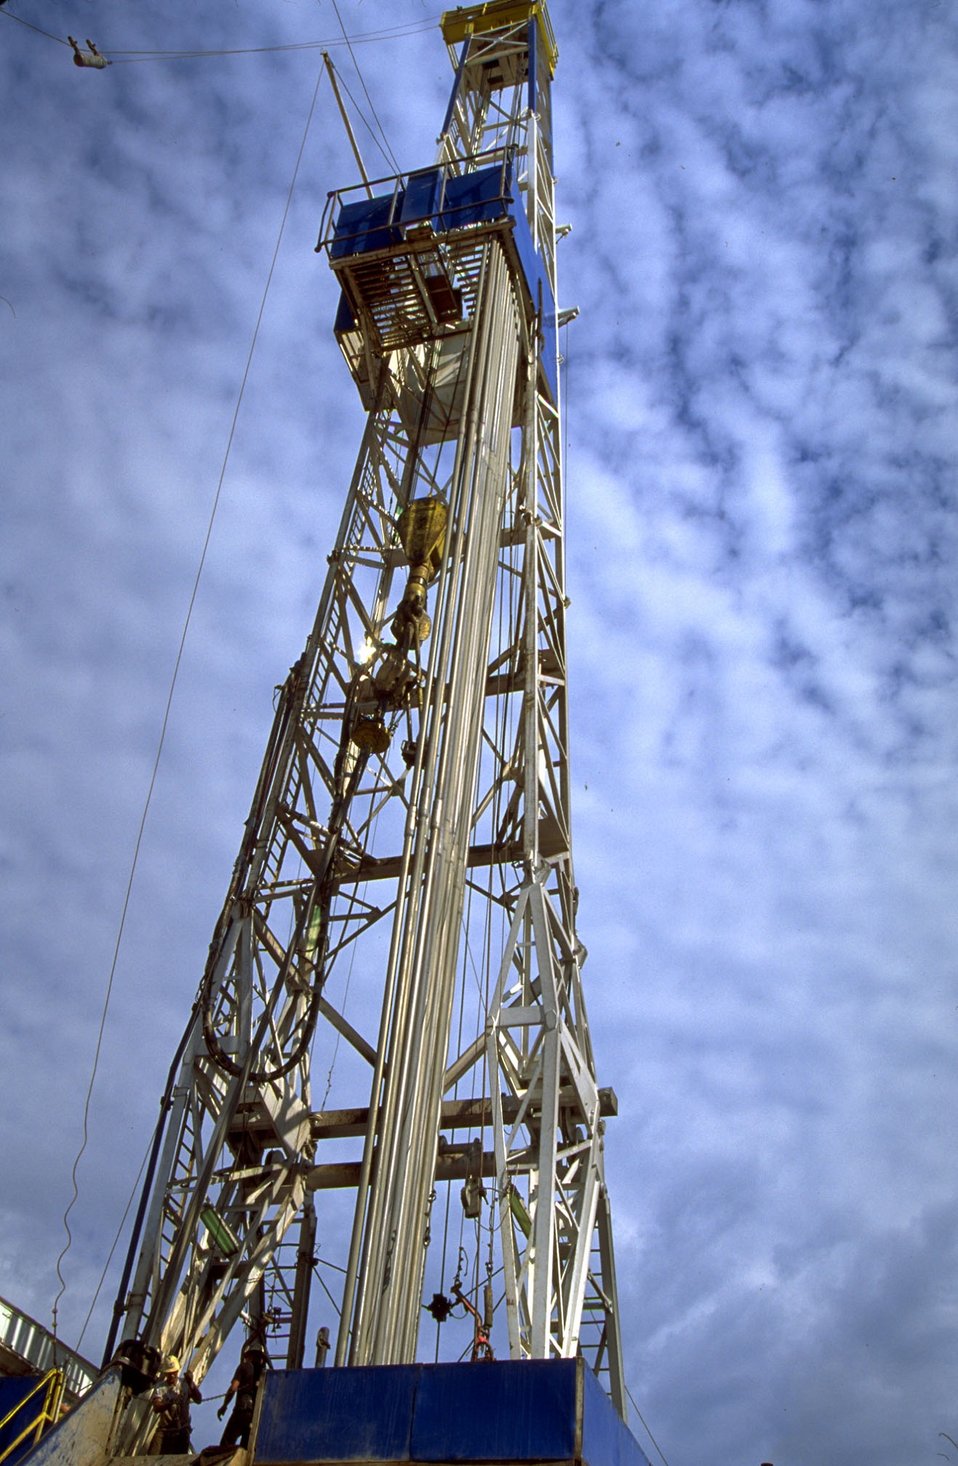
Oil rig derrick with drill pipe